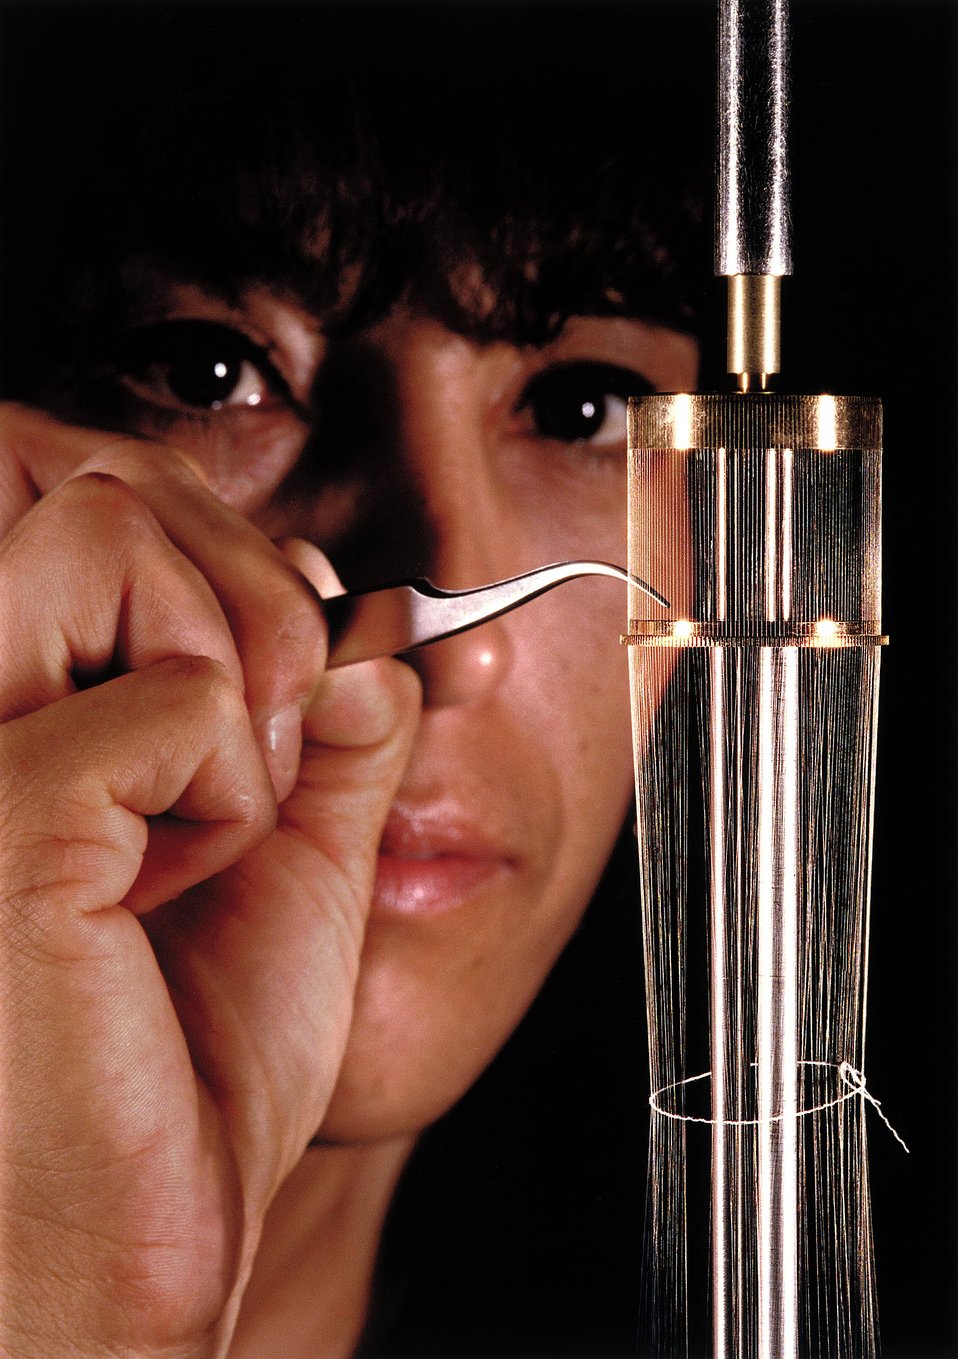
TECHNICIAN USES TWEEZERS TO BUILD ARRAY OF WIRES, EACH 1/10 THE DIAMETER OF A HUMAN HAIR, FOR EXPERIMENT ON Z ACCELERATOR.

SANDIA'S Z PULSED POWER ACCELERATOR, WHICH BEGAN OPERATING IN 1996, IS THE WORLD'S MOST POWERFUL AND MOST EFFICIENT LABORATORY X-RAY SOURCE. Z IS REALLY 36 SEPARATE PULSED POWER DEVICES TIMED TO FIRE SIMULTANEOUSLY TO WITHIN TEN BILLIONTHS OF A SECOND. Z IS A MODIFIED VERSION OF THE PARTICLE BEAM FUSION ACCELERATOR (PBFA) II, WHICH WAS USED UNTIL THE SPRING OF 1996 FOR LIGHT ION FUSION RESEARCH.